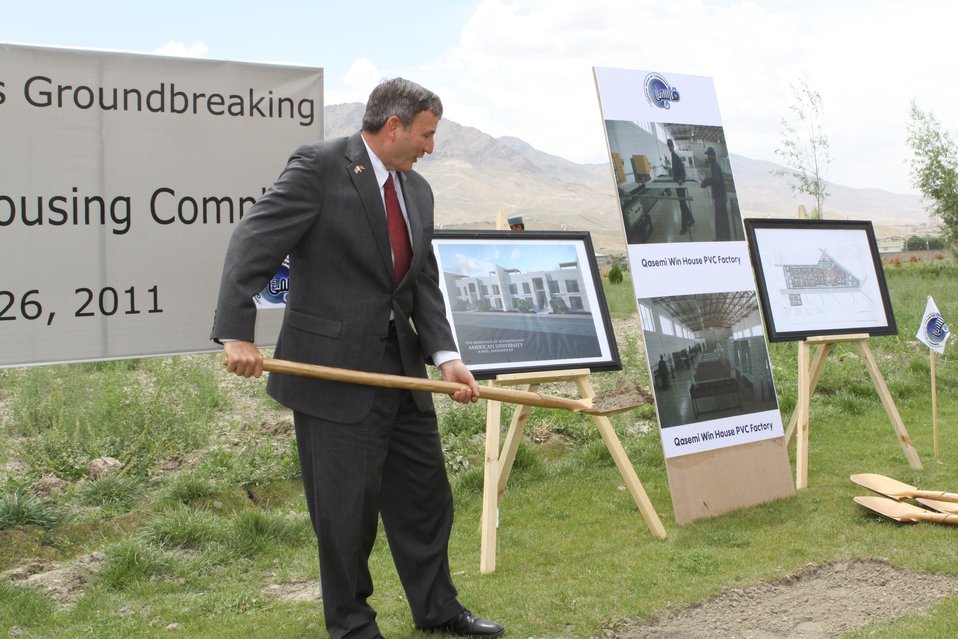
100526 AUAF Graduation 403